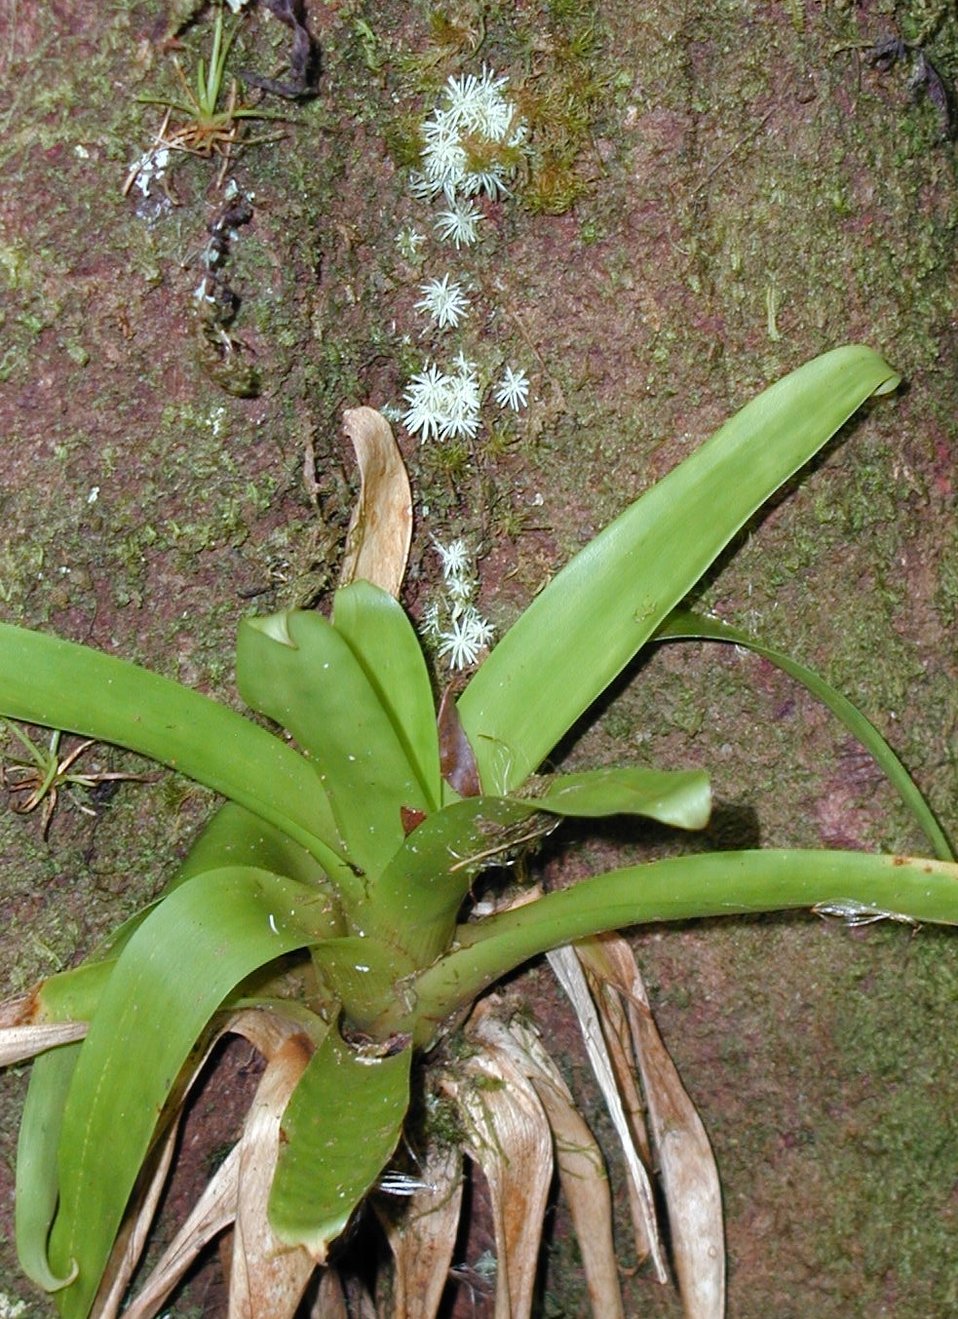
Epiphytes in the jungle at Isla Cocos.